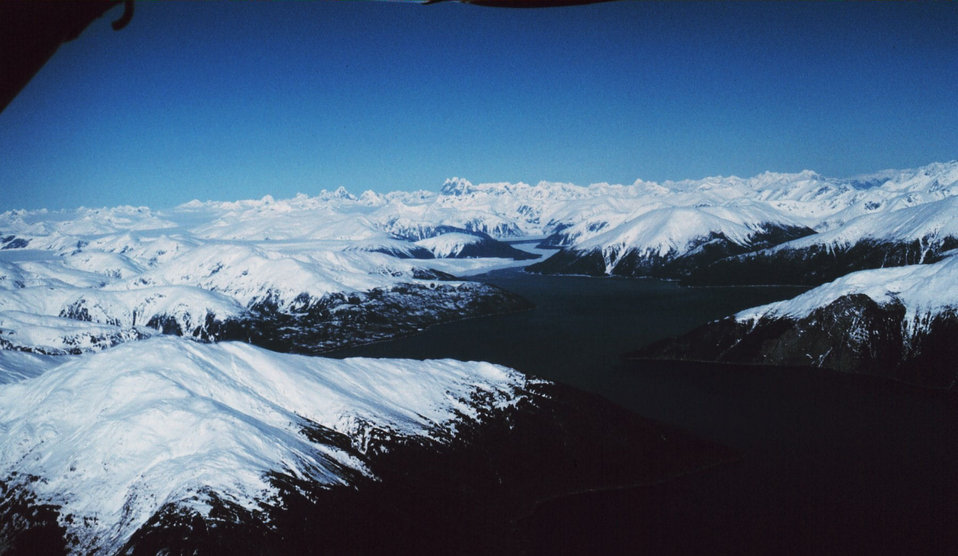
Taku Inlet